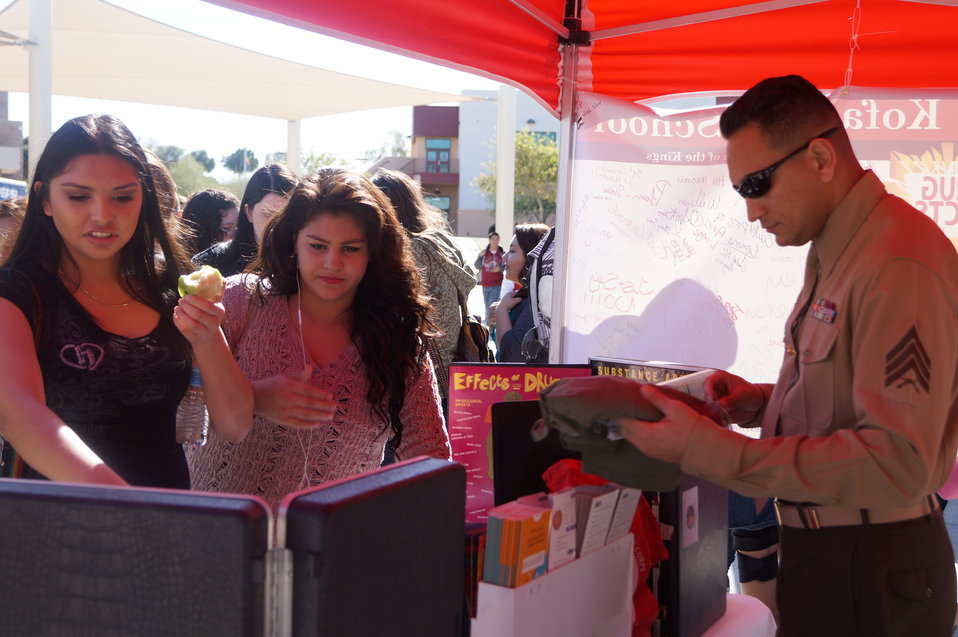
Nationa Drug Facts Week - KOFA HS

The Drug Demand Reduction Program out of Yuma Arizona held numerous events at local schools to support NIDA's National Drug Facts Week, Jan. 27-Feb. 2 2014. Teens participated in drug awareness games, and helped to Shatter the Myths about teen substance abuse.